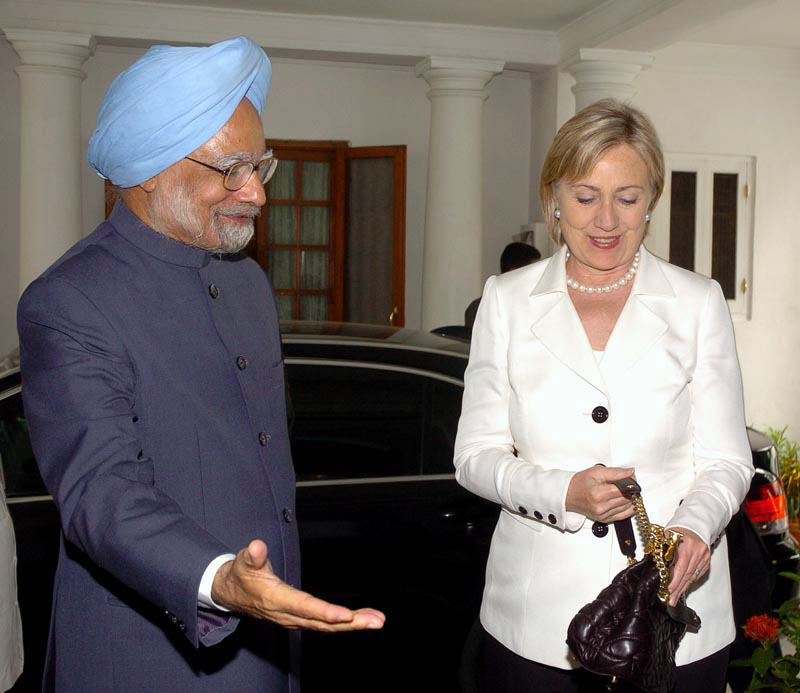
Secretary Clinton Visits Indian Prime Minister

Prime Minister Manmohan Singh greets U.S. Secretary of State Hillary Rodham Clinton upon her arrival at his residence in New Delhi, India July 20, 2009.